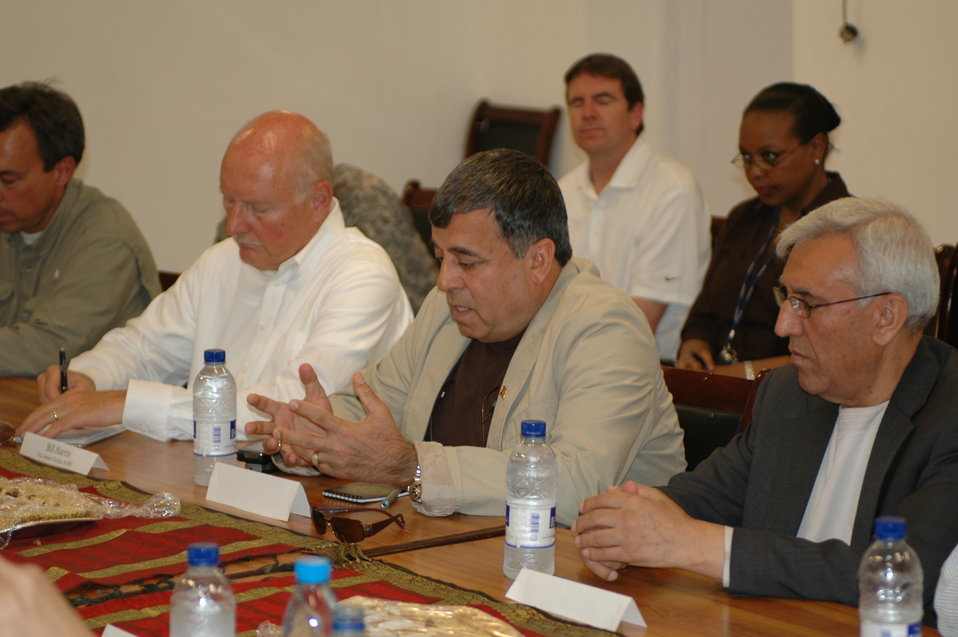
Dr Shah Visits Kandahar April 9, 2010